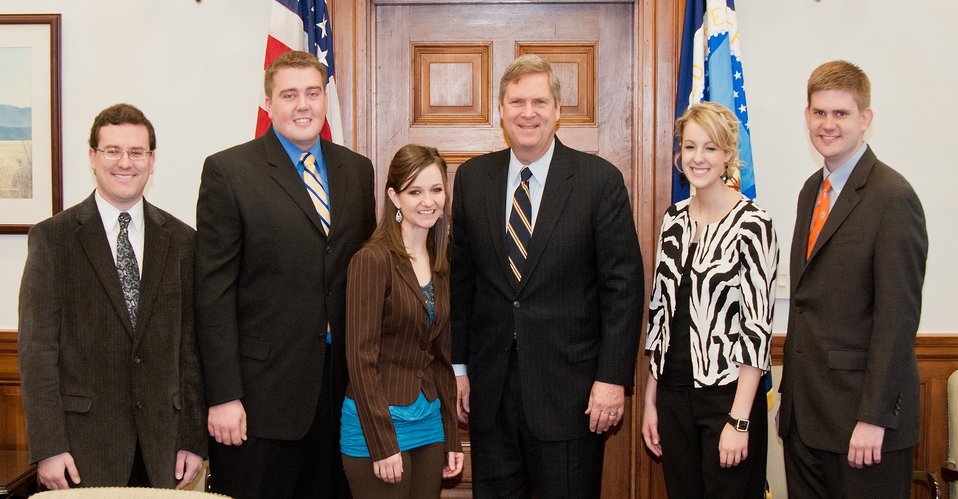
Agriculture Secretary Tom Vilsack met with the Past National Officers of the Future Farmer’s of America (FFA) at the U. S. Department of Agriculture (USDA) in Washington, D. C., on Monday, December 19, 2011. (L to R) Past National Secretary from Colorado Landon Schaffert, Past National Vice President from the Central Region, South Dakota Wyatt DeJong, Past National Vice President from the Western Region, New Mexico Shannon Norris, Agriculture Secretary Tom Vilsack, Past National Vice President from the Eastern Region, Michigan Tiffany Rogers, and Past National Vice President from the Eastern Region, Oklahoma Riley Pagett. Photo by USDA photographer Bob Nichols.